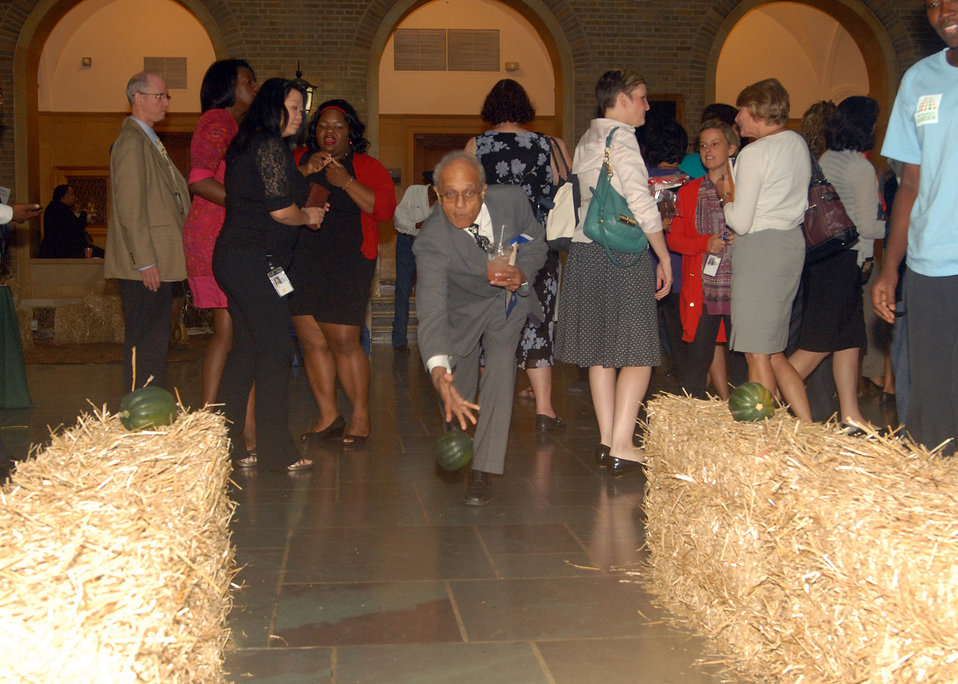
A U.S. Department of Agriculture (USDA) employee tries squash bowling at the U.S. Department of Agriculture’s (USDA) opening ceremony for the 2012 Combined Federal Campaign on Tuesday, Sept. 18, 2012 at the USDA Whitten Building, in Washington, D.C. USDA has set a goal of raising just under $2 million from their employees in the national capital area. The theme for this year’s CFC campaign is “Choose Hope”.